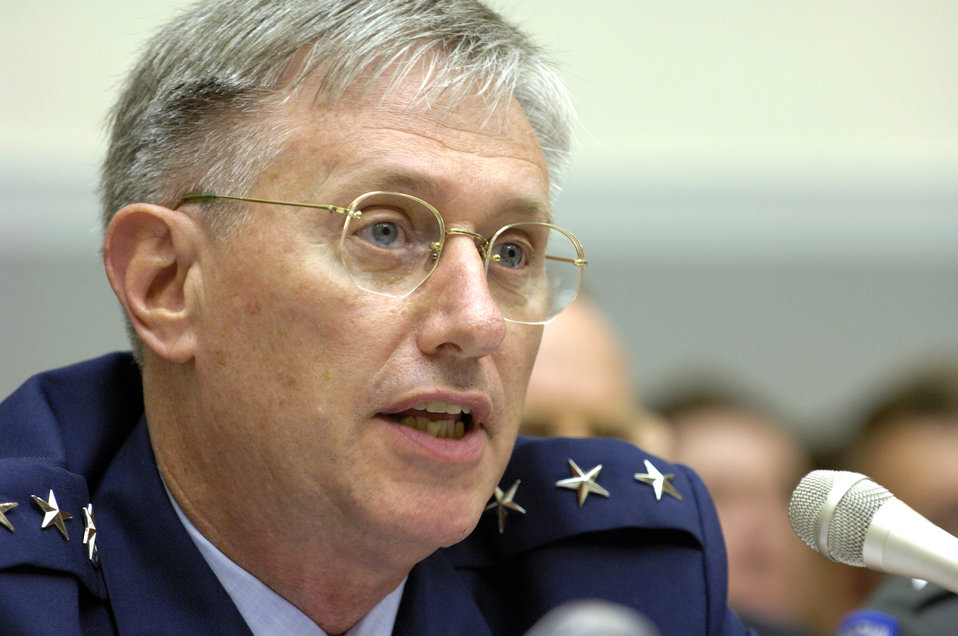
Innovative techniques help Air Force meet manning goals

WASHINGTON -- Lt. Gen. Roger A. Brady answers questions about Air Force recruiting and retention issues during a hearing before the House Armed Services Committee subcommittee on personnel July 19. General Brady is the Air Force deputy chief of staff for personnel.